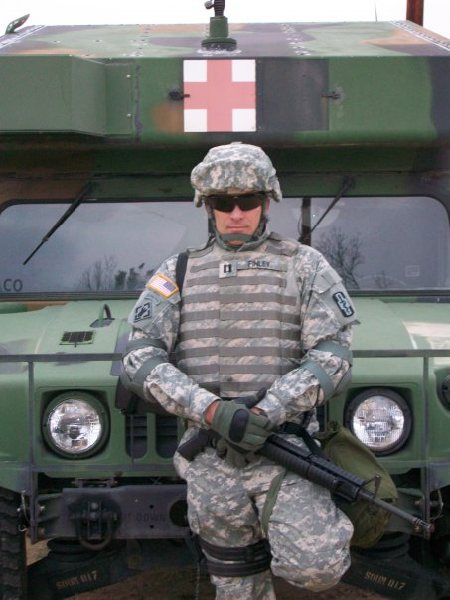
Jeff Finley, Fish Biologist with the Columbia Fish and Wildlife Conservation Office, served on Active Duty from 1988 to 1991 with service in Korea and in Desert Shield and Desert Storm. Since 1994, he has served in the Army Reserve. He returned in November 2010 from an 18-month military leave when he served as the Commander for his unit in Operation Iraqi Freedom and Operation New Dawn with responsibility for the northern third of Iraq. He achieved the rank of Staff Sergeant before accepting a Direct Commission as an Officer in 2002. He is now a Captain (promotable) in command of the 480th Preventive Medicine Detachment. He has 23 years of service to the Army.